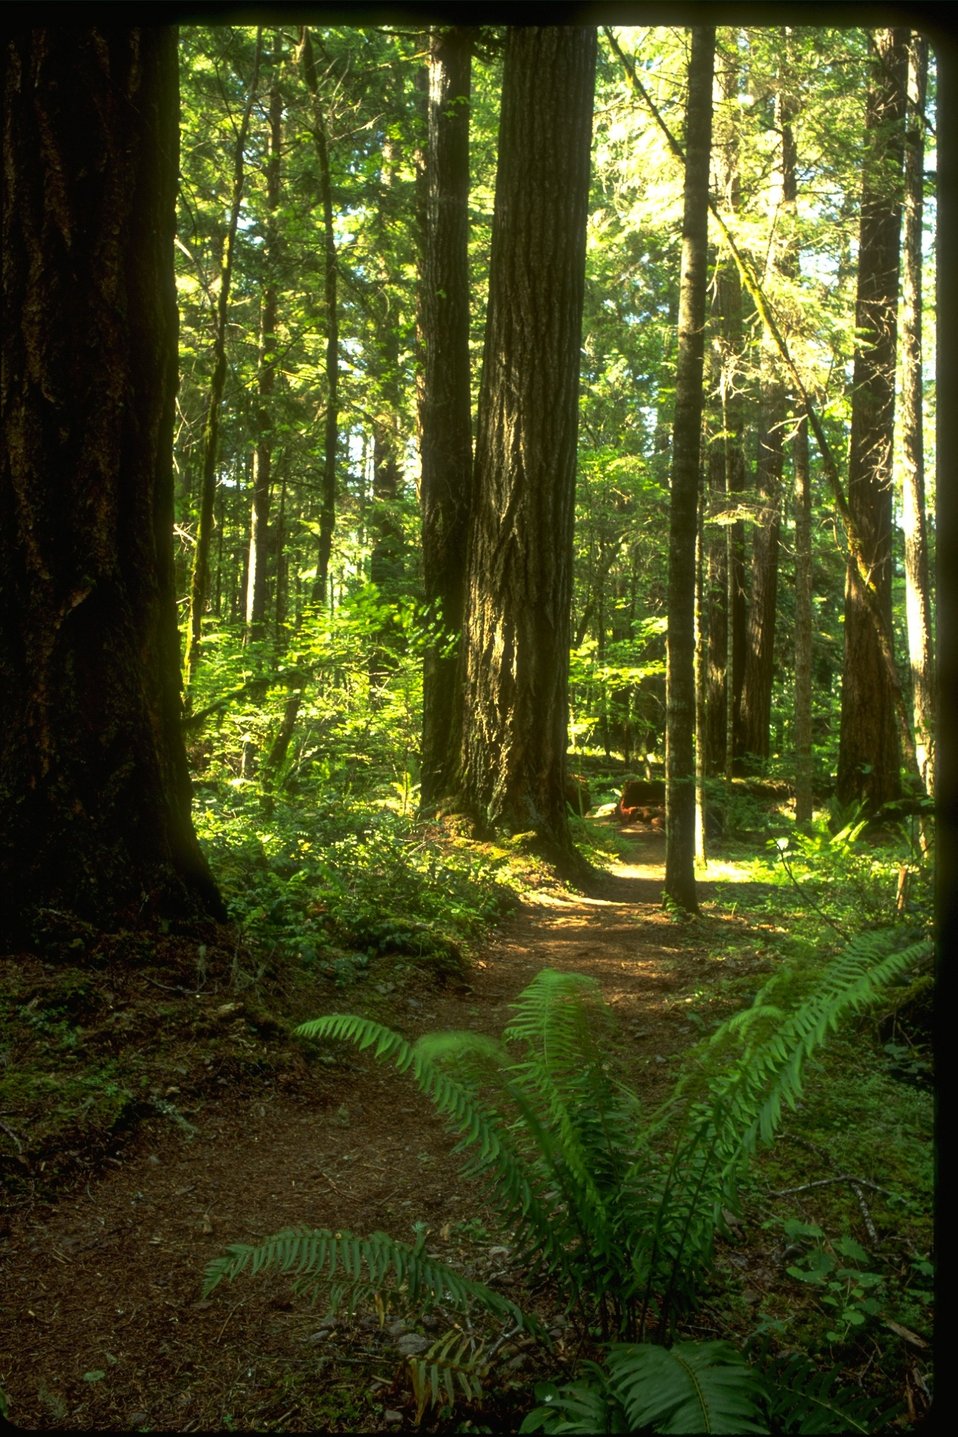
North Umpqua River Trail.